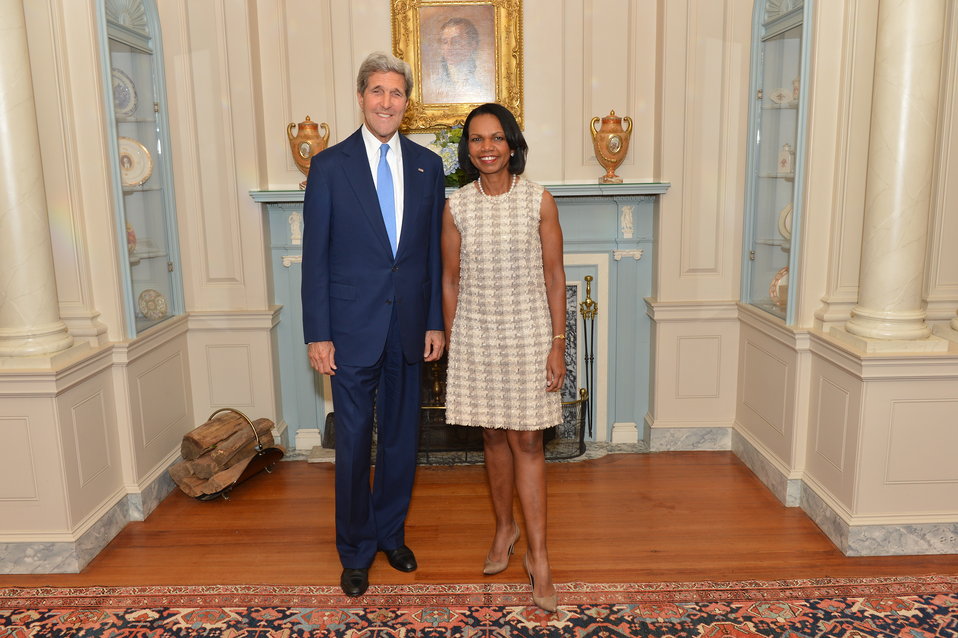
Secretary Kerry and Former Secretary of State Condoleezza Rice Pose for a Photo at a Portrait Unveiling Ceremony in Honor of the Former Secretary

U.S. Secretary of State John Kerry poses for a photo with former Secretary of State Condoleezza Rice at the Portrait Unveiling Ceremony and Reception in honor of the Former Secretary at the U.S. Department of State in Washington, D.C. on June 18, 2014.